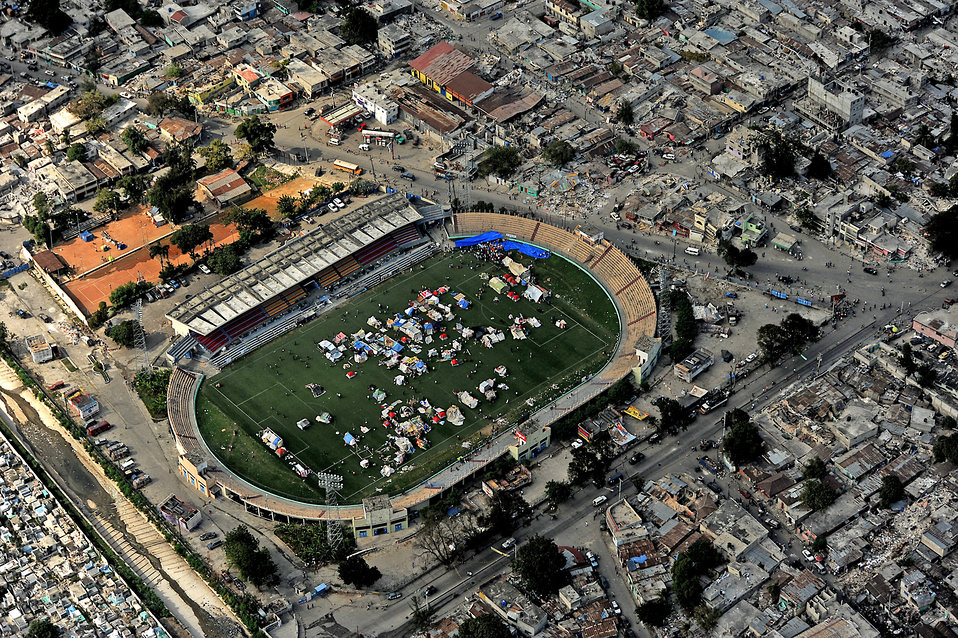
Operation Unified Response

An aerial view shows downtown Port-au-Prince, Haiti, Jan. 17, 2010. Makeshift shelters are being erected in open locations throughout the city in the aftermath of the devastating earthquake that struck the country Jan. 12, 2010. A Jan. 18, 2010, air delivery mission of supplies was directed at trying to find the most expedient method of deploying supplies to victims and relief workers.